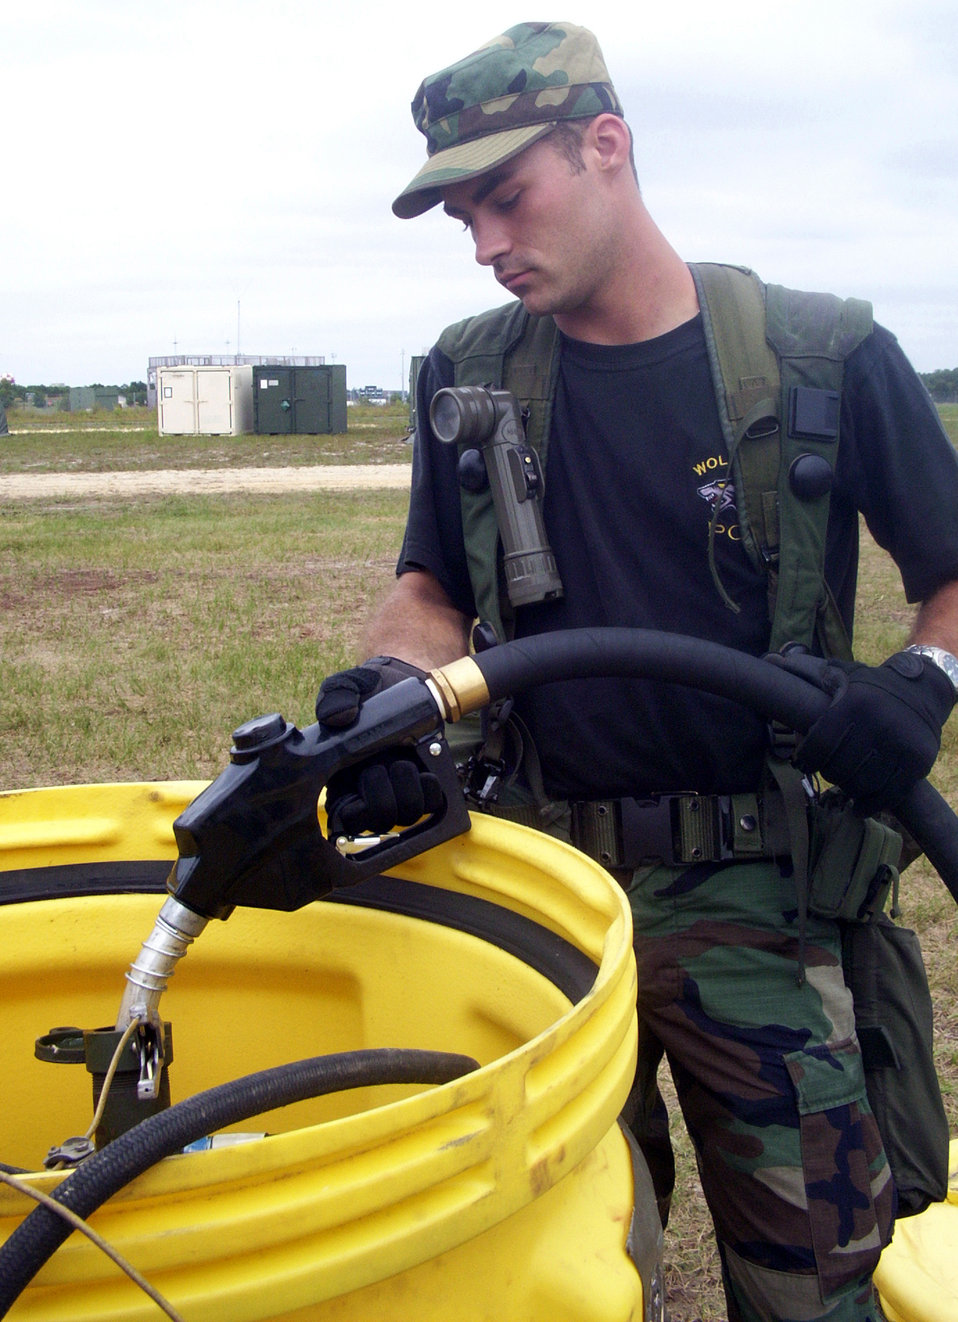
A full bladder

NAVAL AIR AND ENGINEERING STATION LAKEHURST, N.J. -- Senior Airman Roger Robbins fills a 50-gallon fuel bladder with diesel fuel to heat field showers during an Eagle Flag exercise here July 25. Airman Robbins is a fuels specialist from the 52nd Logistics Readiness Squadron at Spangdahlem Air Base, Germany.